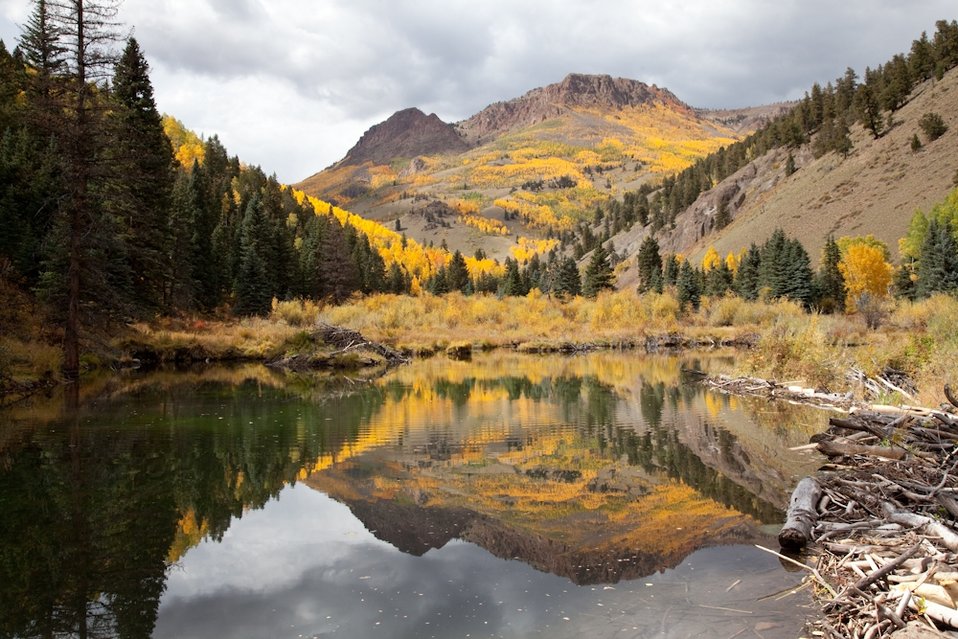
Aspens are reflected in Shallow Creek west of Creede, CO. The trail begins as an old road and immediately crosses the creek. But one mile in, and you hike into an aspen- and spruce-dominated forest. The trail is open to hikers, horseback riders, and mountain biking.